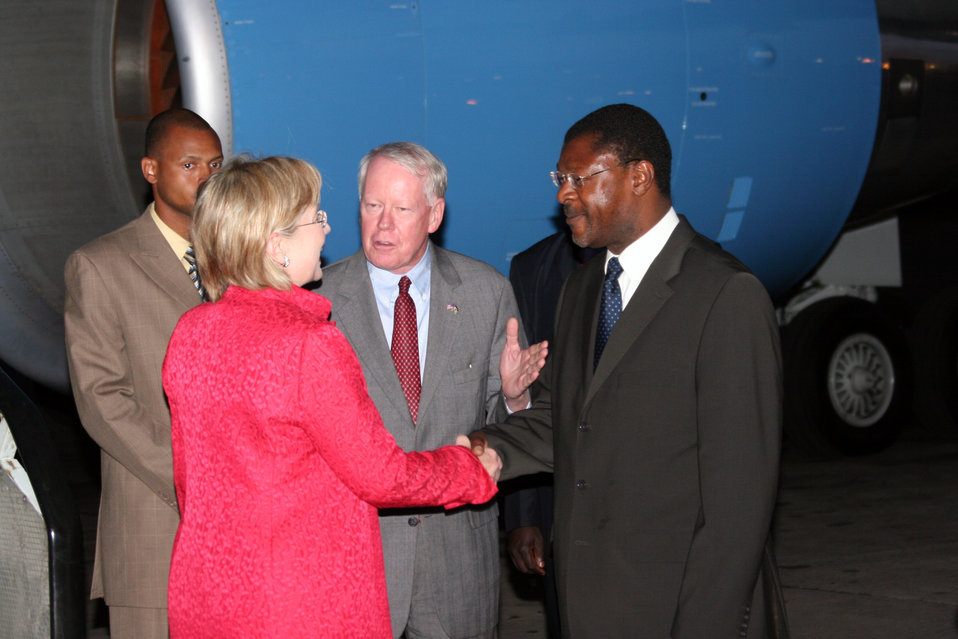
Secretary Clinton Arrives in Nairobi, Kenya

U.S. Secretary of State Hillary Rodham Clinton is introduced to Kenyan Foreign Minister Moses Wetangula by U.S. Ambassador to Kenya Michael E. Ranneberger during her arrival at Jomo Kenyatta International Airport in Nairobi, Kenya August 4, 2009.